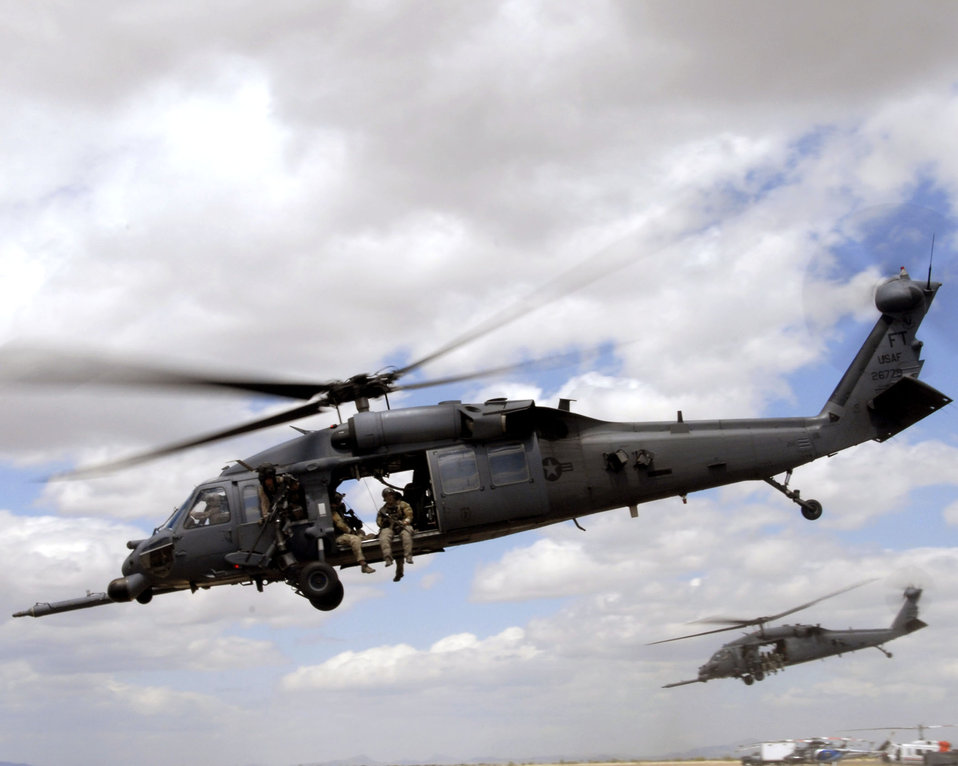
Airmen train in combat search, rescue missions

Two HH-60G Pave Hawk rescue helicopters participating in Exercise Angel Thunder 2010 take off to rescue survivors of an exercise scenario April 21, 2010, at Bisbee-Douglas International Airport in Ariz.